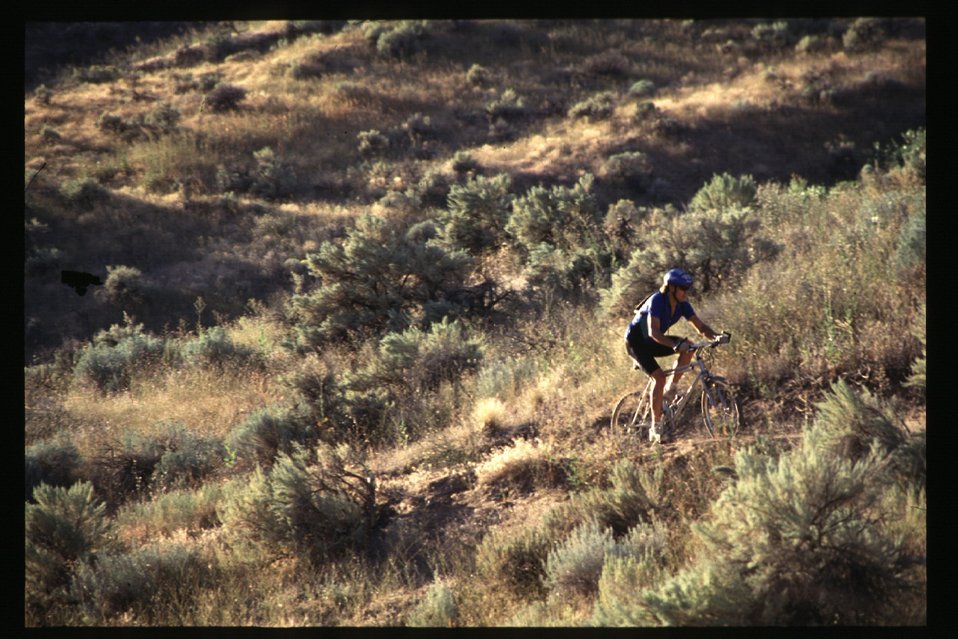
Bikers on Boise Foothills Boise Front bicyclists Four Rivers Field Office LSRD Lower Snake River District